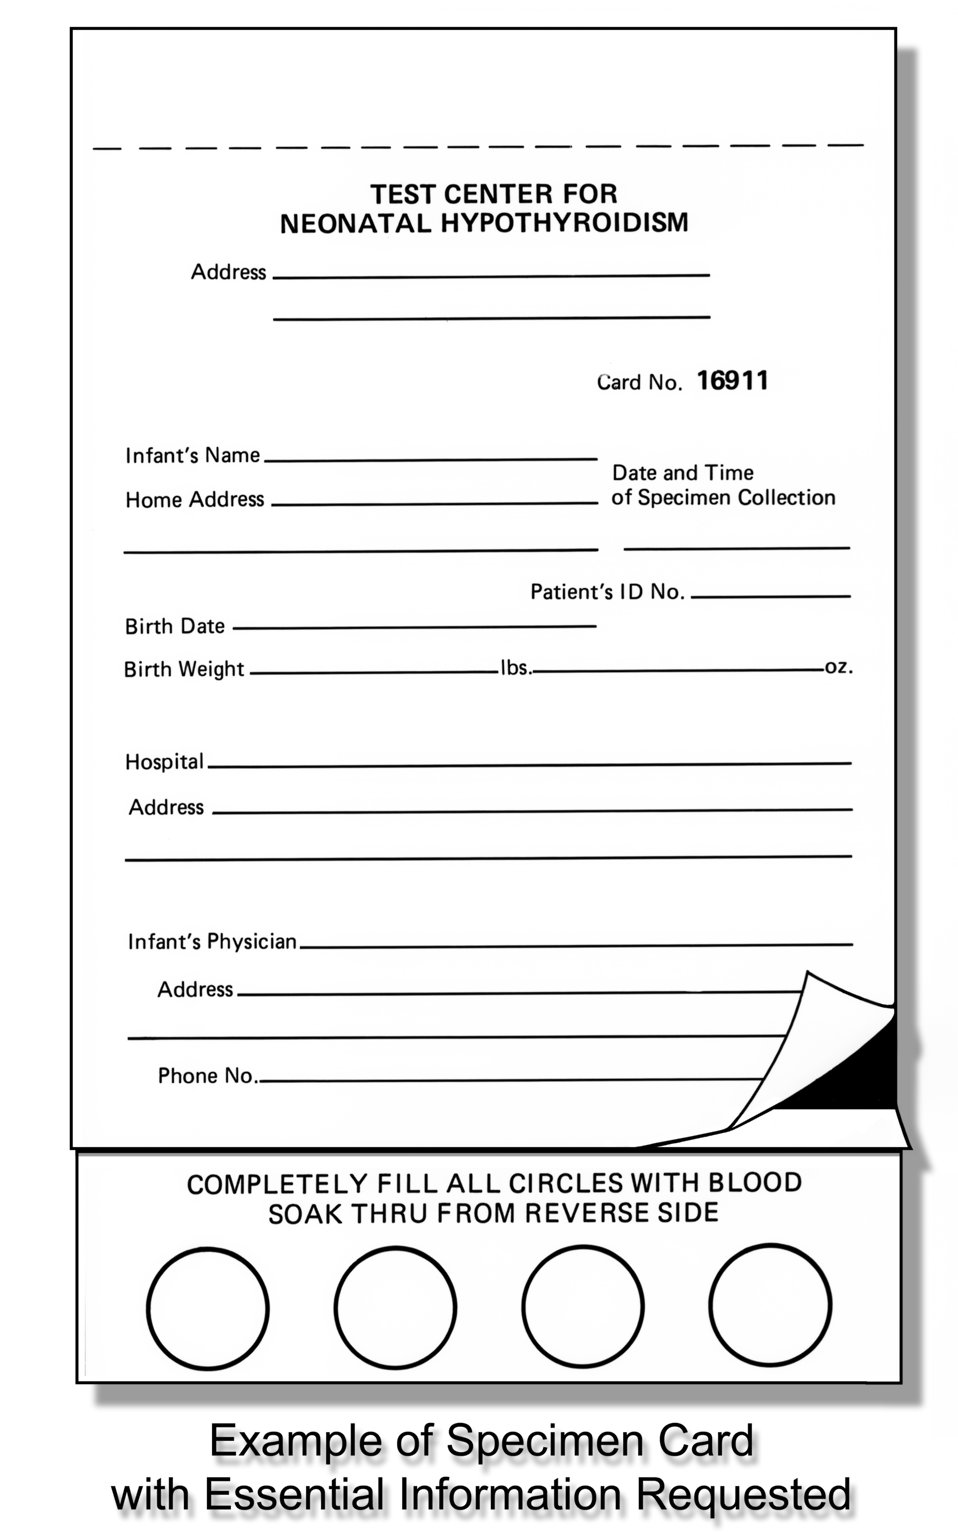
An example of a standard infant blood specimen card indicating the essential information that is normally requested.